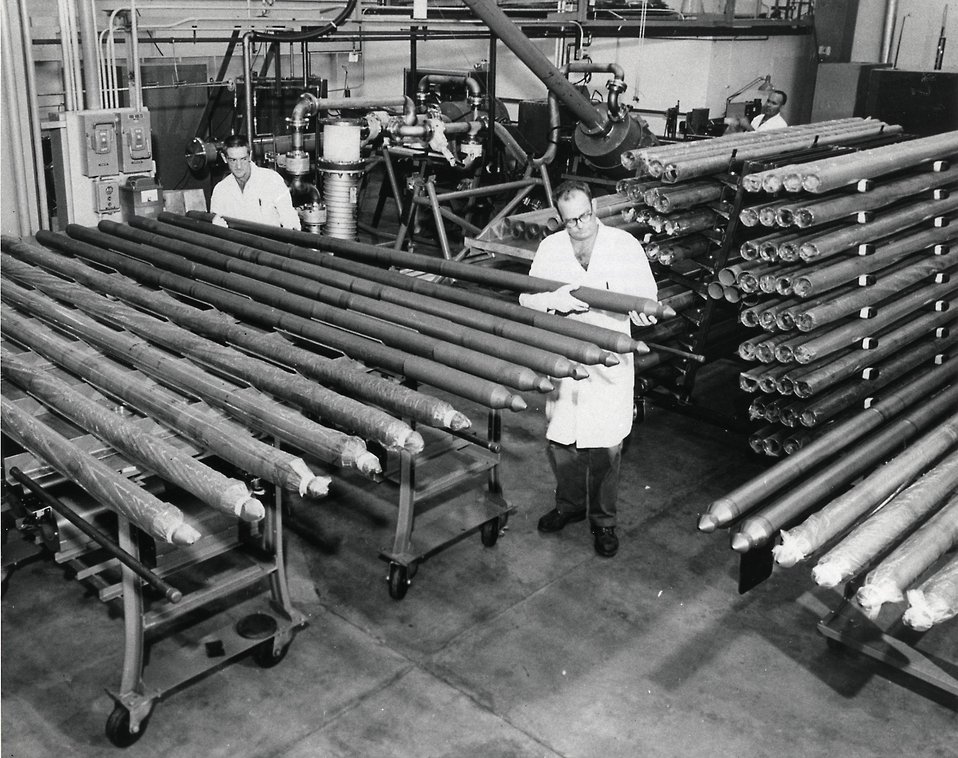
Photo shows some of the 825 graphite-clad fuel elements fabricated by General Atomic Division of General Dynamics in San Diego, Calif., for the Peach Bottom High Temperature Gas-cooled Reactor nuclear power station in Pennsylvania. Circa 1967.